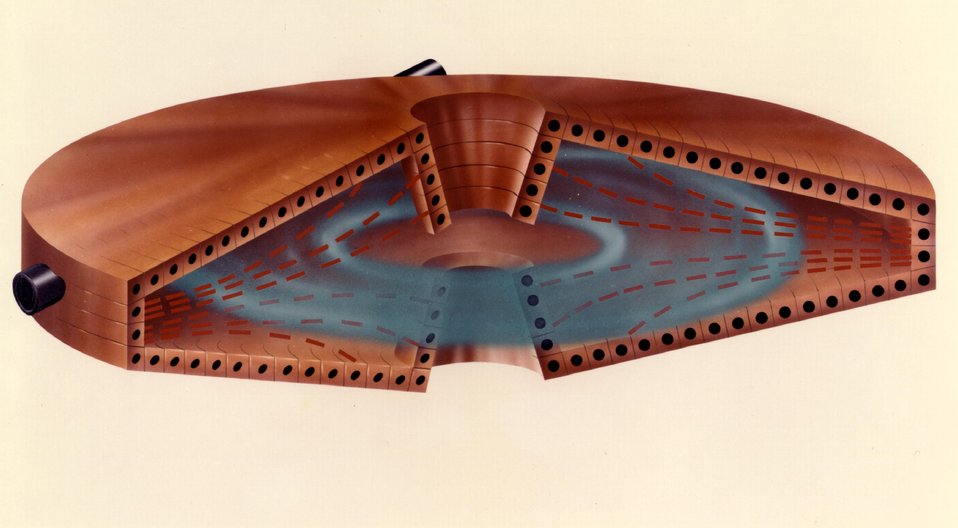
Scale Model of the Mirror Disc Machine.